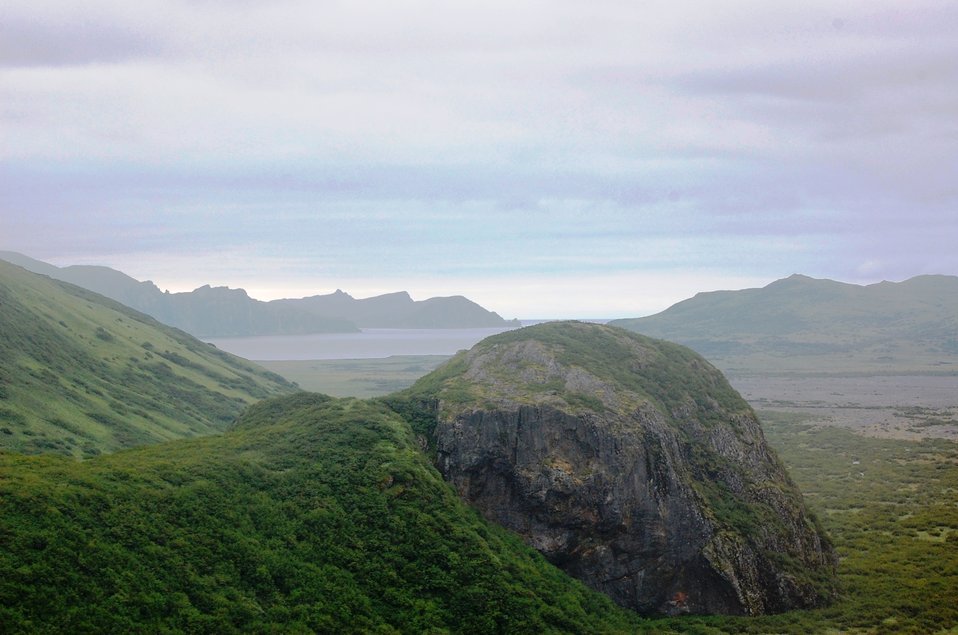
Unimak Landscapes

SE Unimak Island, Alaska Maritime National Wildlife Refuge